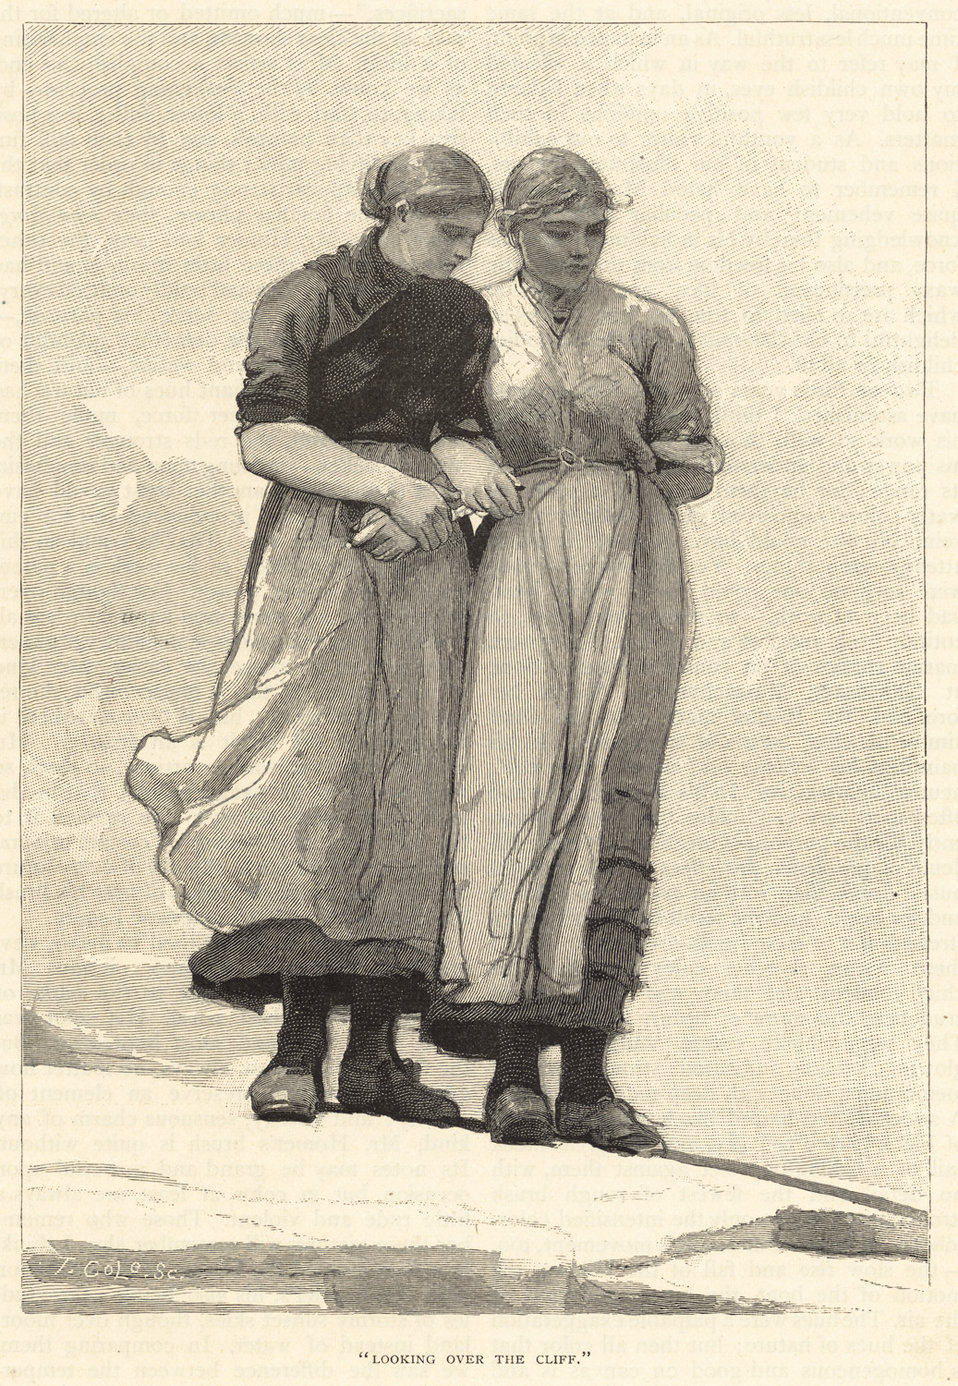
File name: 10 09 000158 Title: 'Looking over the cliff' Creator/Contributor: Homer, Winslow, 1836-1910 (artist) Date issued: 1883-11 Physical description: 1 print : wood engraving Genre: Wood engravings; Periodical illustrations Notes: Published in: Scribner's Monthly, Volume XXVII, November 1883, p. 16.; Signed lower right: T. Cole Sc. Collection: Winslow Homer Collection Location: Boston Public Library, Print Department Rights: No known restrictions
Flickr data on 2011-08-11: Camera: Epson Exp10000XL10000 Tags: Winslow Homer User: Boston Public Library BPL